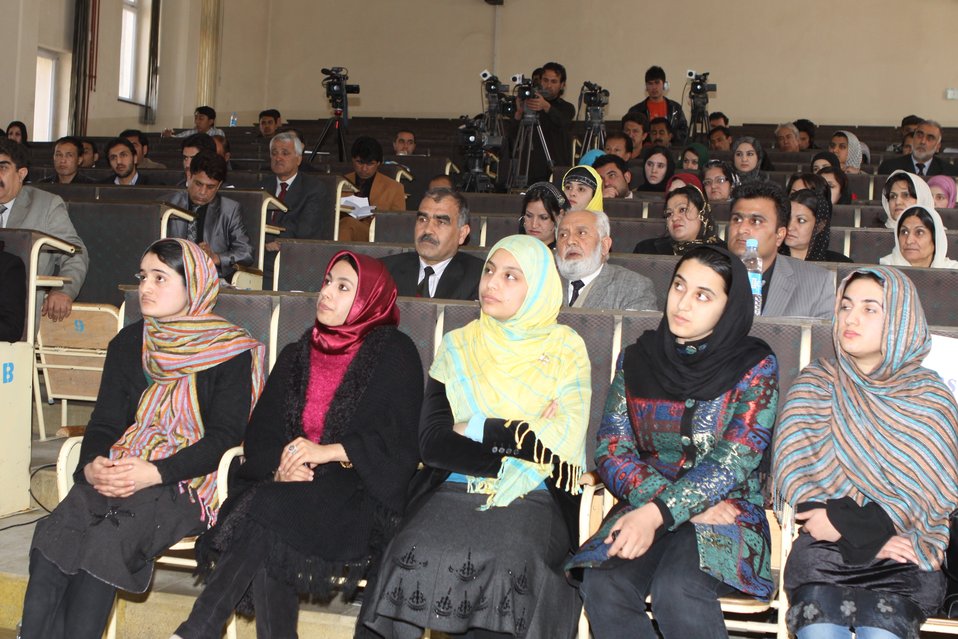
Female University Students Complete Internship

Kabul, Afghanistan | March 16, 2011 – In response to a demand for qualified Afghan engineers, Kabul University celebrated completion of an intensive five-month Mentor Protégé Training Program today by 10 female fourth year university students. The Training Program is a joint effort between the Government of the Islamic Republic of Afghanistan, the U.S. Agency for International Development (USAID), and the Universities of Kabul, Kandahar, Alberoony in Kapisa, Shiekh Zayed in Khost. The graduation ceremony highlighted collaboration with these national institutions in building the technical skills of young Afghans, made possible by USAID.

Four of the interns are engineers, while the remaining six are from the faculties of computer science, economics, and psychology.

Speaking about the event, H.E. Minister of Public Works Abdul Qudus Hamidi said, “The future of Afghanistan lies in developing the skills of our youth, and the engineering skills of these graduates today represent a small but important step forward for the country.”

Keynote speakers at the ceremony included H.E. Deputy Minister of Higher Education Abdul Rahim; USAID Senior Deputy Mission Director Robert Hellyer; and Chancellor of Kabul University Professor Hamidullah Amin. Approximately 150 people, including current and former students attended the graduation.

Launched last year, the Mentor Protégé Training Program has provided qualifying students the opportunity to intern with USAID’s Strategic Provincial Roads-South and East Afghanistan project and gain practical experience in a real work environment. The goal of the program was to offer interns the opportunity to gain hands-on experience to reinforce their formal studies. A total of 30 students from four national universities have benefitted from this program.

“The promotion of women’s rights is integrated into the overall U.S. Government development strategy and can be found in key programs, including education, healthcare, security, rule of law, political participation, agriculture, and economic development,” said Robert Hellyer. “The U.S. Government is committed to the Afghan leadership of programs that directly enhance development, particularly as it relates to women’s issues.”

This event also highlighted the learning achievements of students and emphasized the importance of hands-on internship programs. The curriculum is designed to instill students with the knowledge and confidence to qualify for engineering positions upon completion of their fourth year at their respective universities.